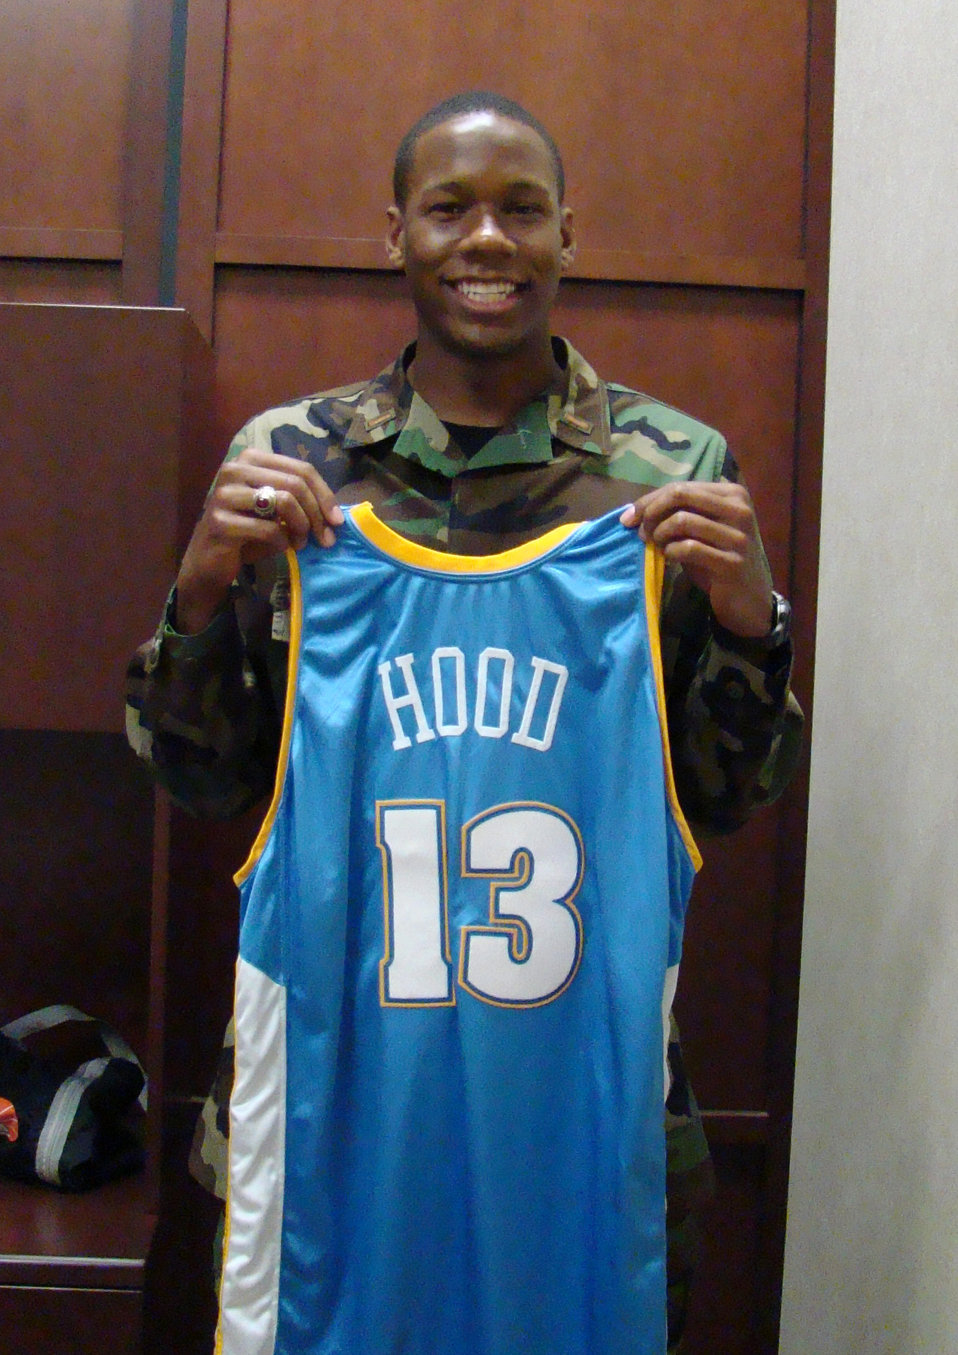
Antoine Hood

Then 2nd Lt. Antoine Hood shows off his Denver Nuggets jersey. Lieutenant Hood was offered a spot on the NBA team and played professionally before he returned to active duty to fulfill his service commitment. The Captain is now eligible to play again and is planning to return to the league this season.